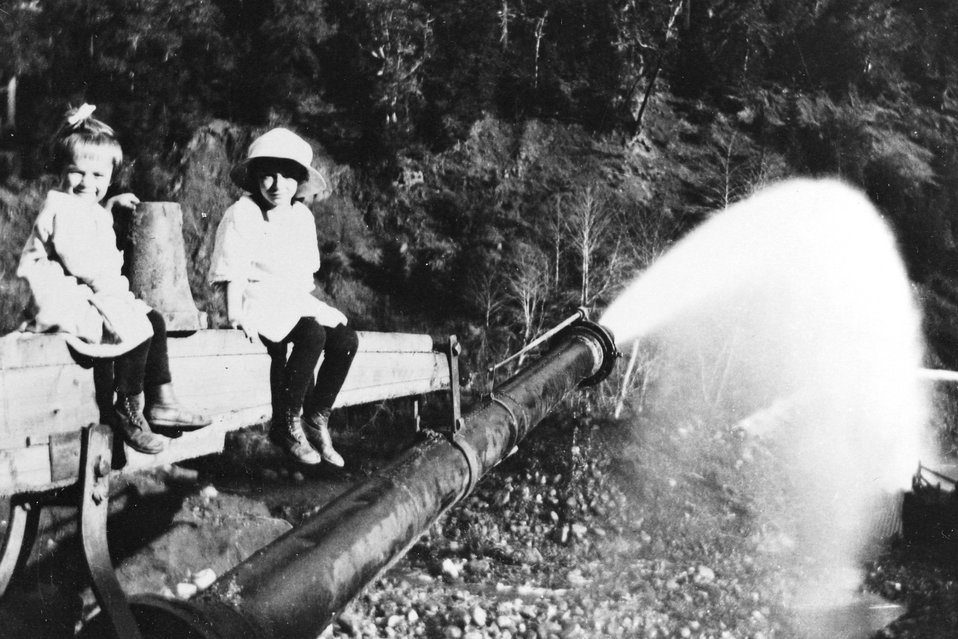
Corwin children at a placer mine at Mule Creek next to the Giant Drive.